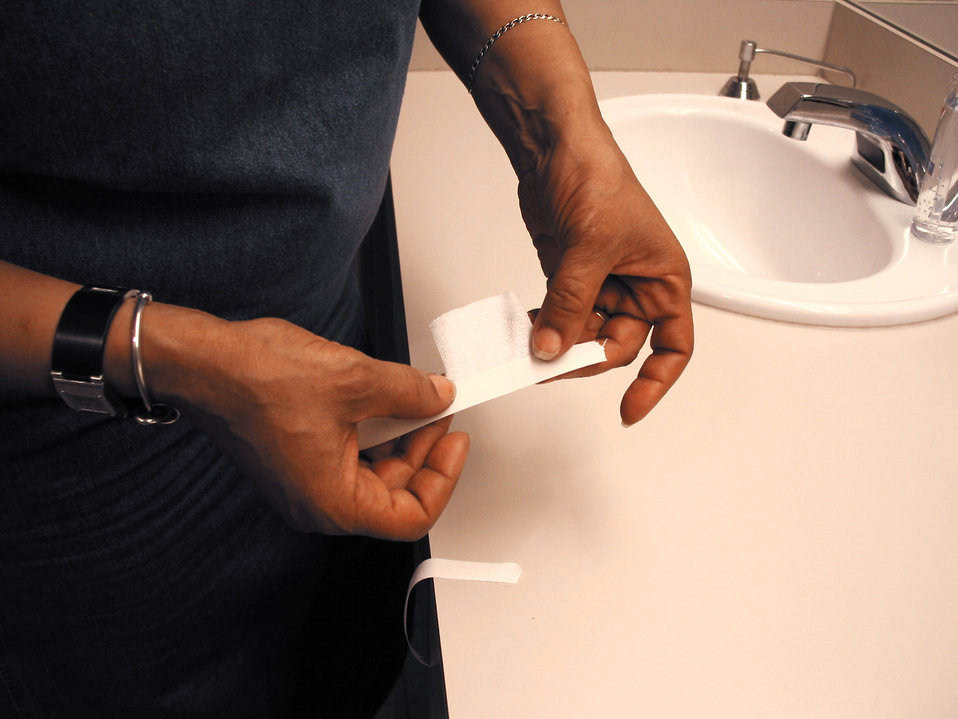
This demonstrates how a smallpox vaccinee correctly prepares a gauze bandage to cover the vaccination site.